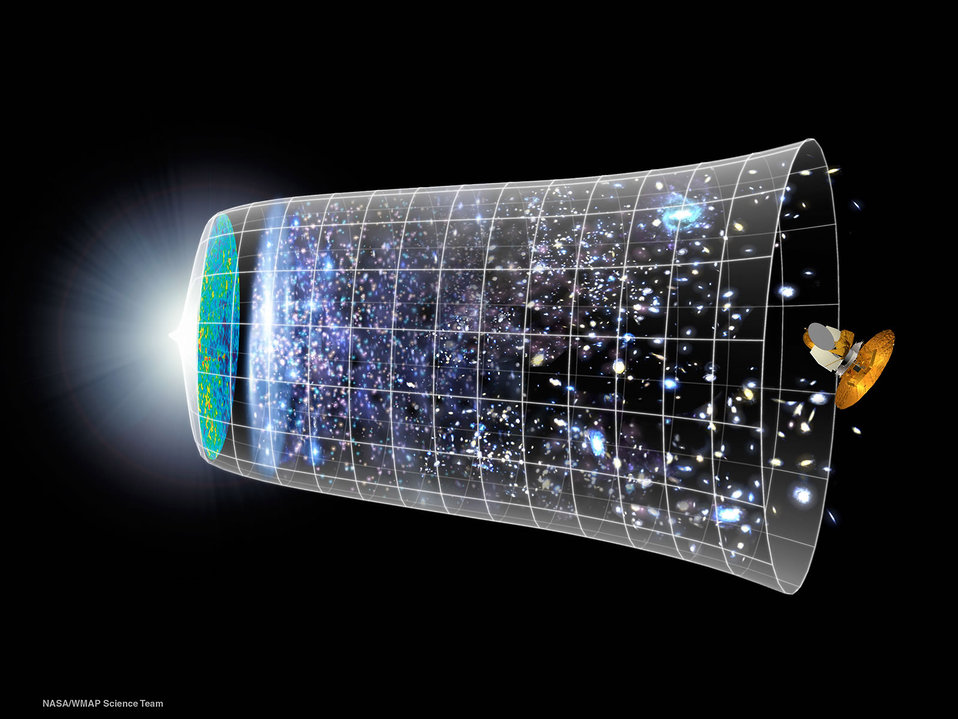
Space Technology

dhffrrhfddrrrrr